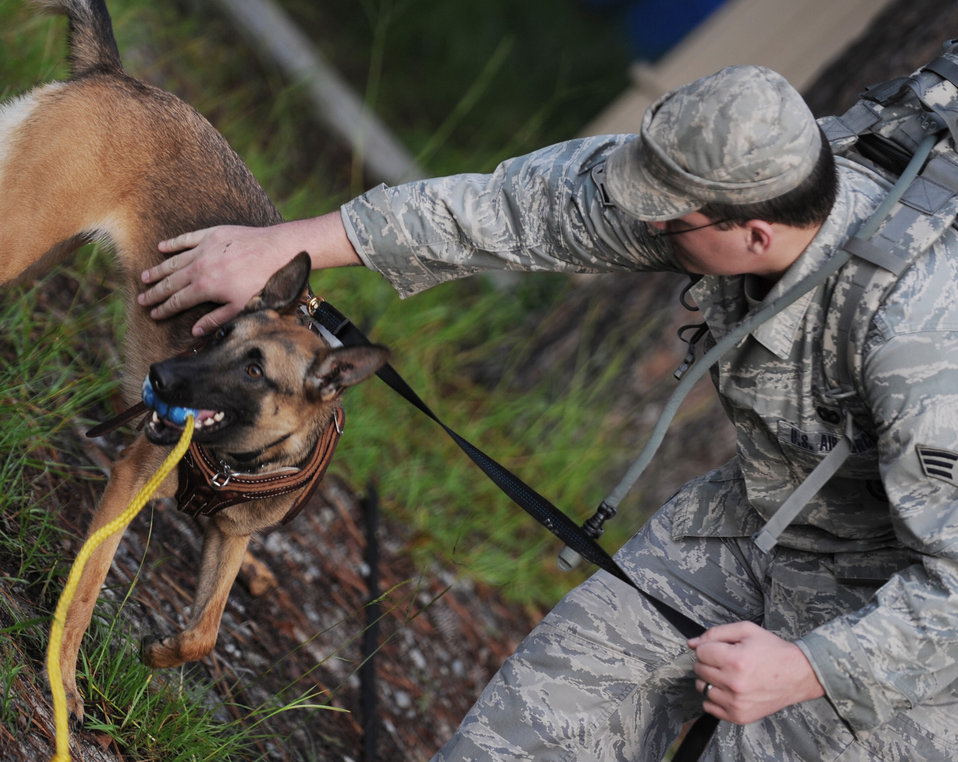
New dog and handler develop bond

Senior Airman Beaun Clegg praises Rreyana after she performed a protection training problem July 9 at Moody Air Force Base, Ga. Rreyana is one of three new dogs that arrived in June from Lackland AFB, Texas. Airman Clegg is a military working dog handler with the 822nd Security Forces Squadron.